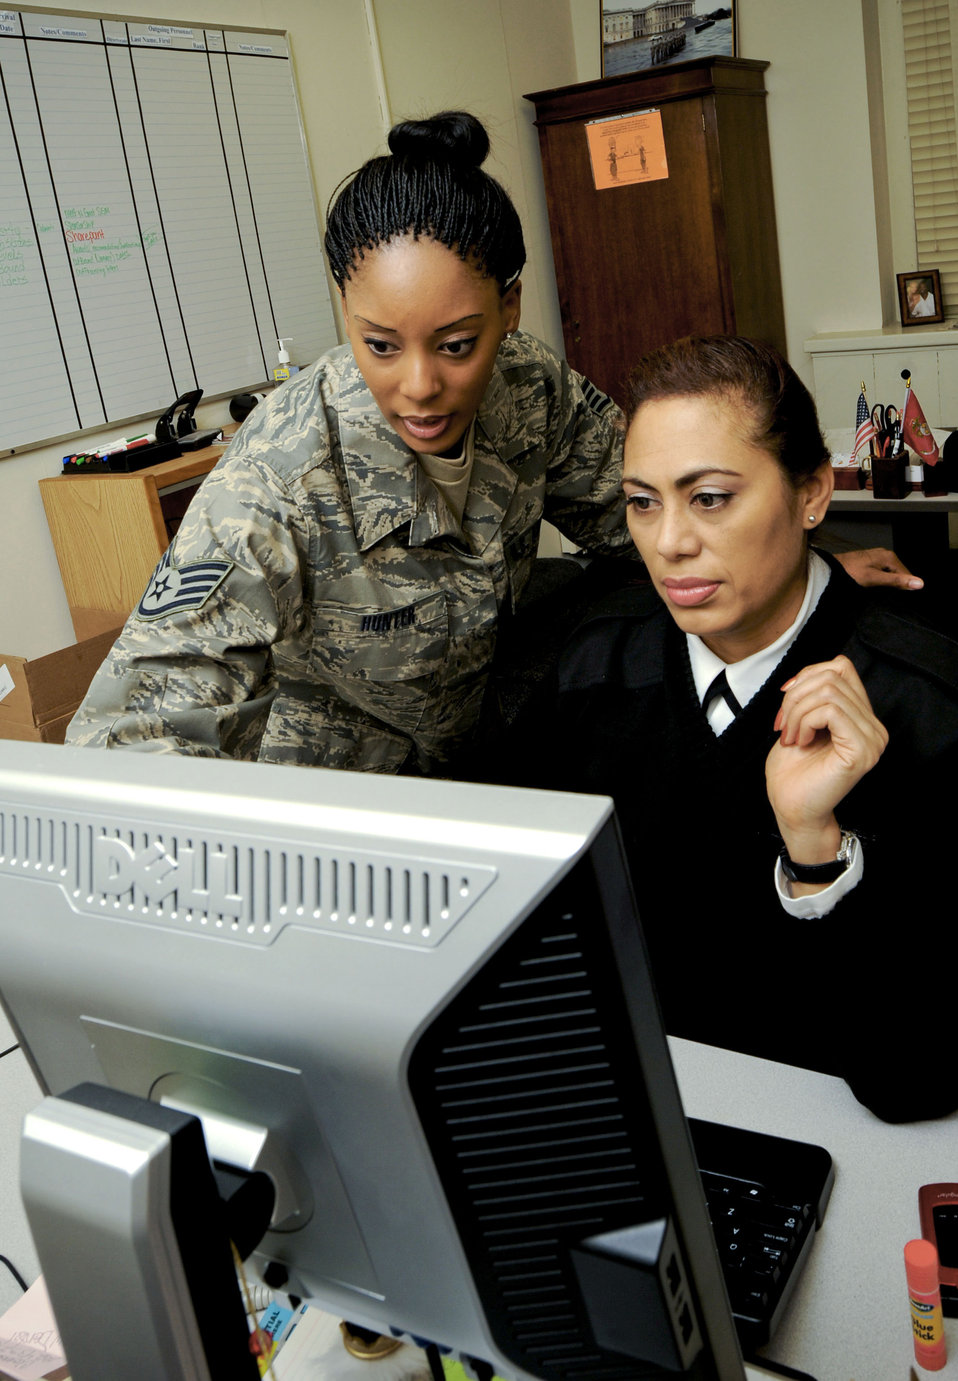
56th Armed Forces Inaugural Committee

Staff Sgt. Shequila Hunter and Navy Petty Officer 2nd Class Alexandria Elis work on administrative issues for the Armed Forces Inaugural Committee in Washington, D.C.